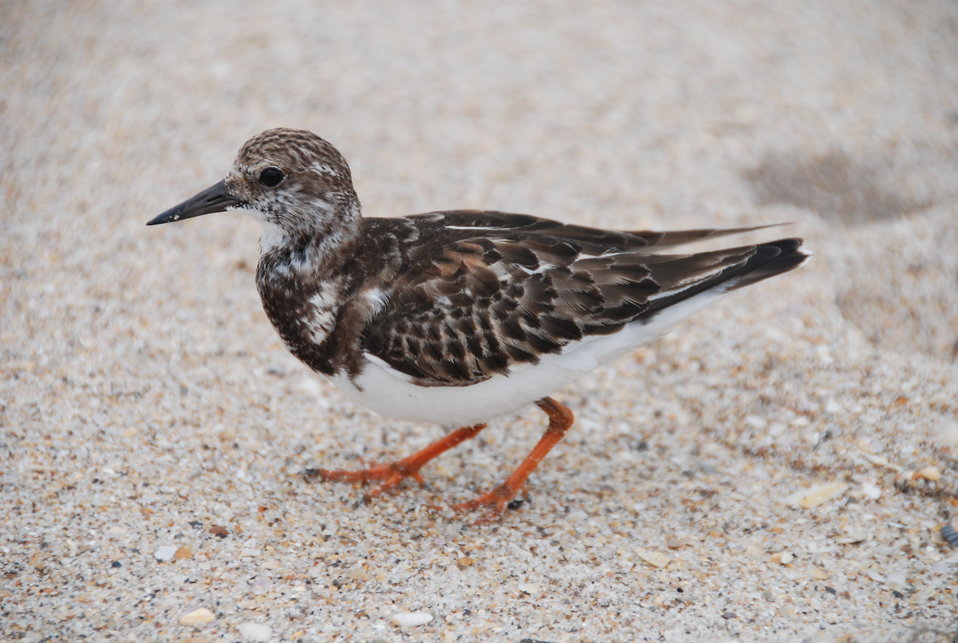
Ruddy turnstone

In non-breeding plumage.